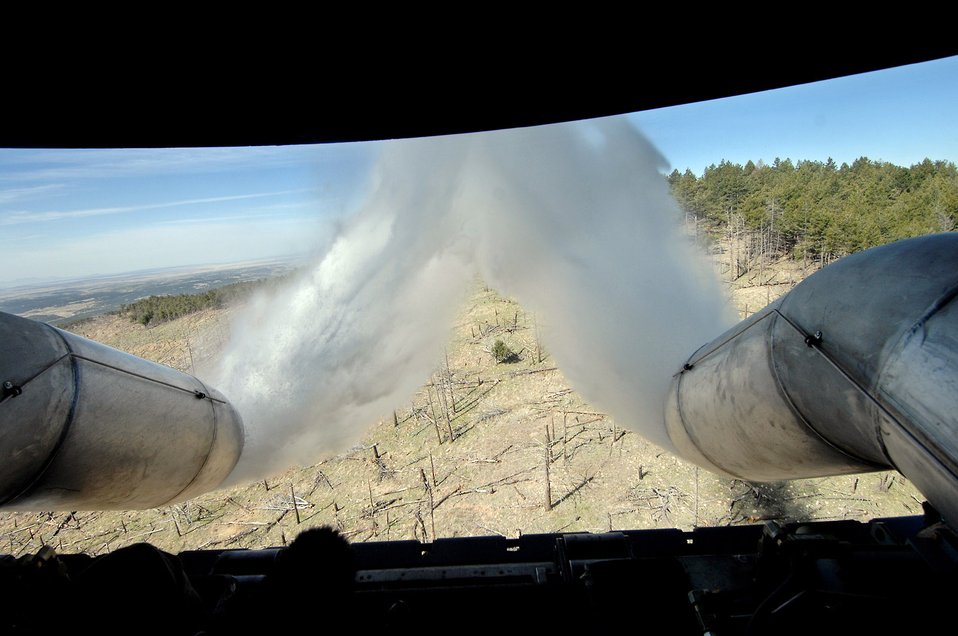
Air Force aerial firefighters train in New Mexico

A C-130 Hercules drops water over New Mexico during annual Modular Airborne Fire Fighting System training May 1 at the U.S. Forest Service's Albuquerque Air Tanker Base in New Mexico. The C-130 is from the 302nd Airlift Wing at Peterson Air Force Base, Colo.,